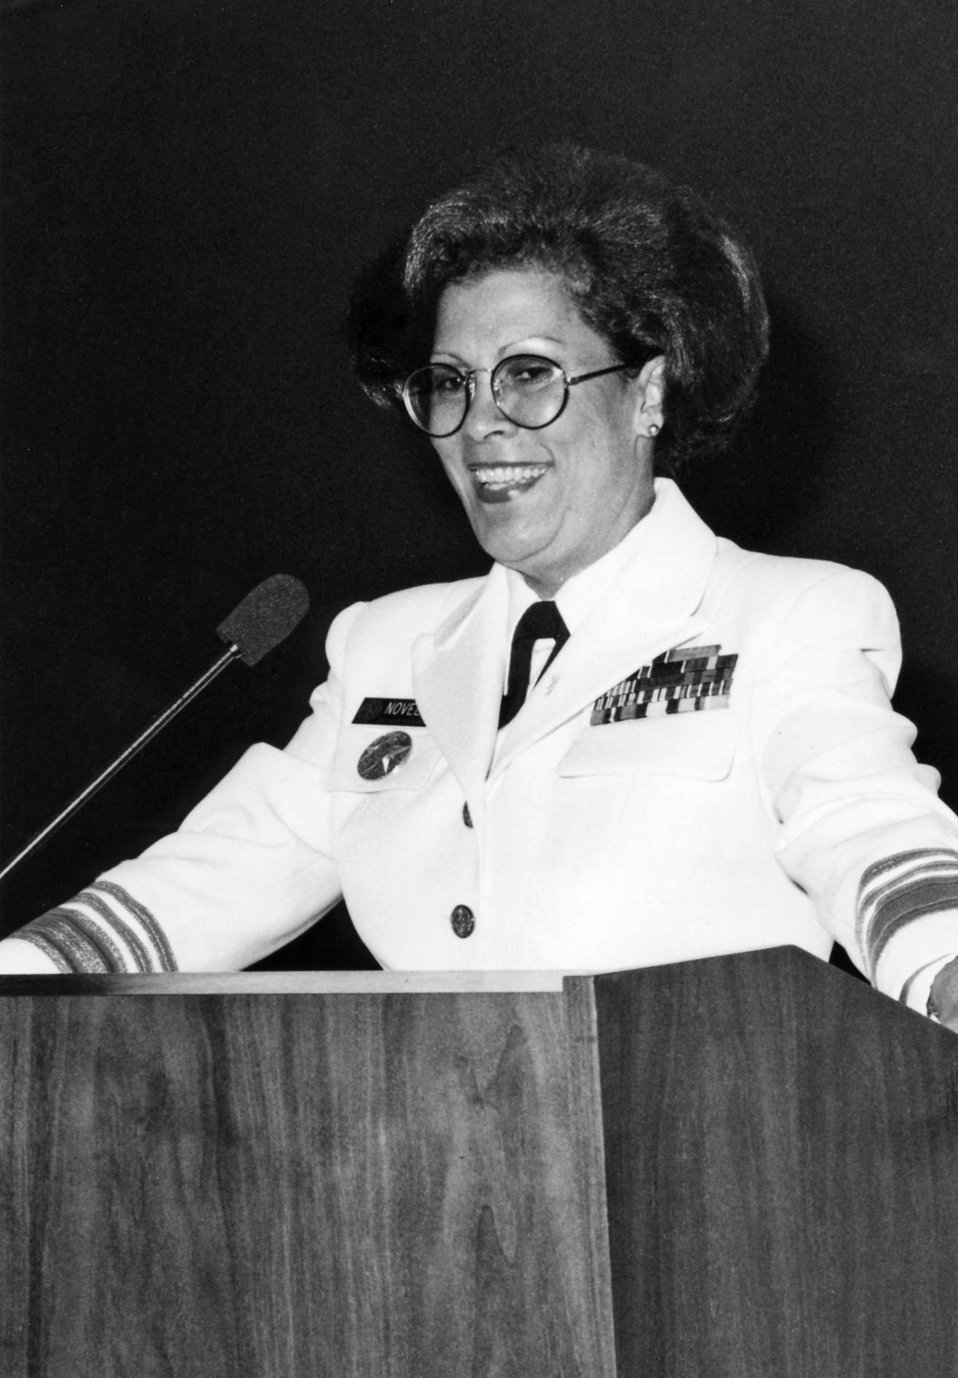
This photograph shows U.S. Surgeon General, Antonia C. Novello at a podium while she addressed Centers for Disease Control personnel during a visit to the organization's headquarters in 1991.